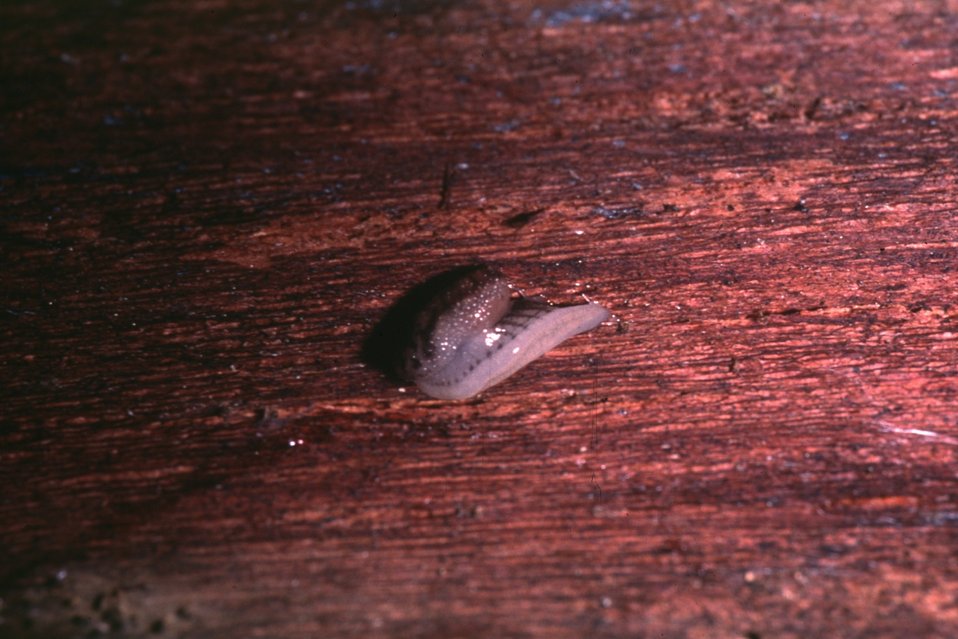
Keeled Jumping-slug (Hemphillia buringtoni).